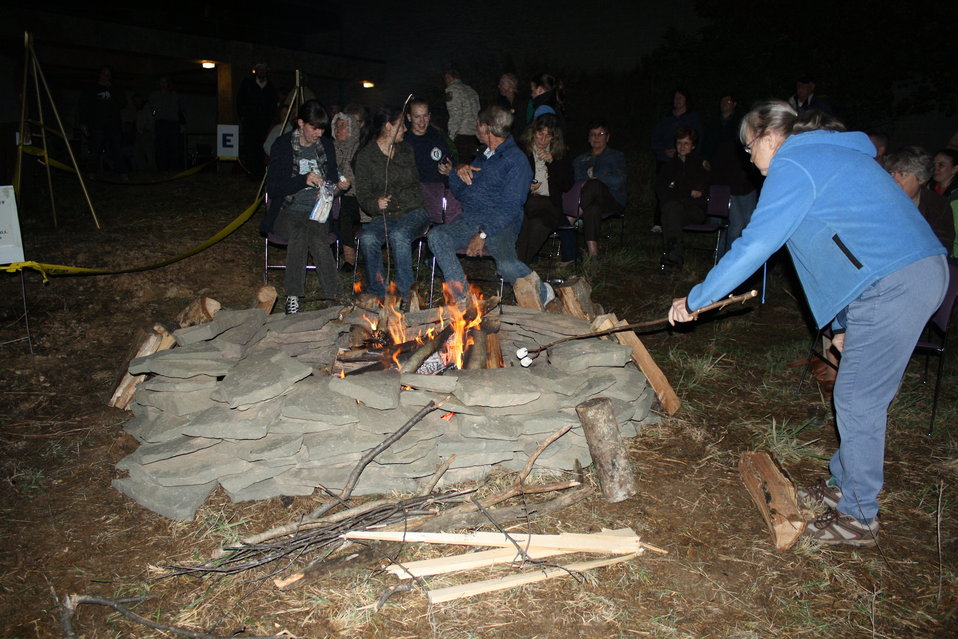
Patuxent Research Refuge 75th Anniversary

Symposium attendees told stories around a campfire.